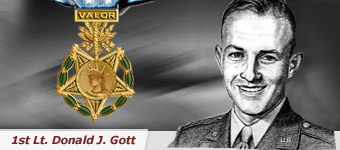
First Lt. Donald J. Gott was awarded the Medal of Honor posthumously May 16, 1945, for his heroic exploits during a bombing raid over a German industrial area November 1944.